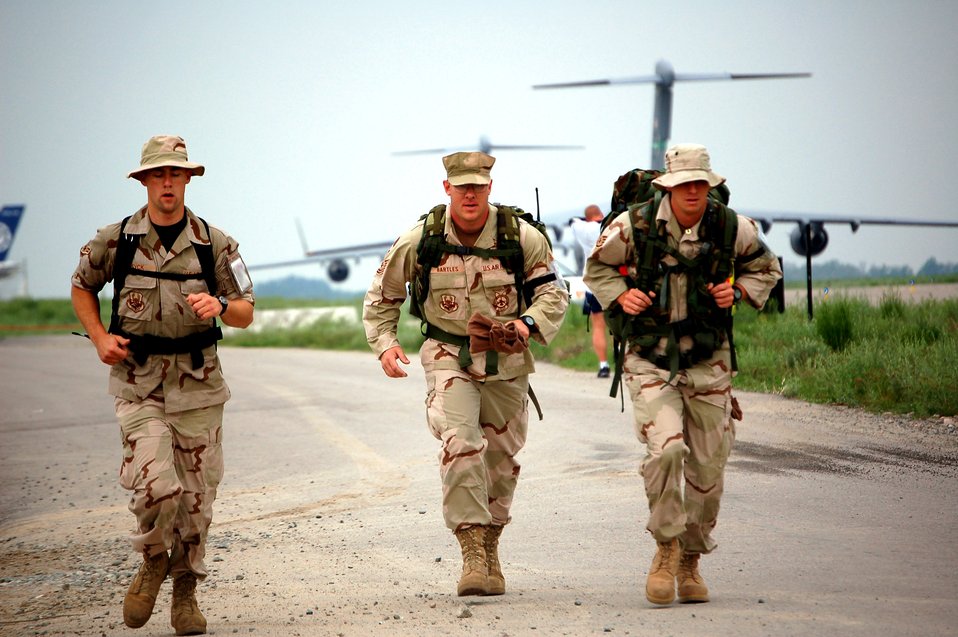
A world away, Airmen enjoy hometown tradition

(From left) Airman 1st Class Sean Syck, Tech. Sgt. Brian Bartles and Staff Sgt. Michael Tyburski run in the Bloomsday Away 12K race at Manas Air Base, Kyrgyzstan, on Sunday, May 7, 2006. The Bloomsday race is annual tradition in Spokane, Wash. This year, Airmen brought their own version of the race to Manas. The three firefighters are with the 376th Expeditionary Civil Engineer Squadron. While they finished among the last, they were probably the first to run the Bloomsday in full military uniform with 50-pound rucksacks.